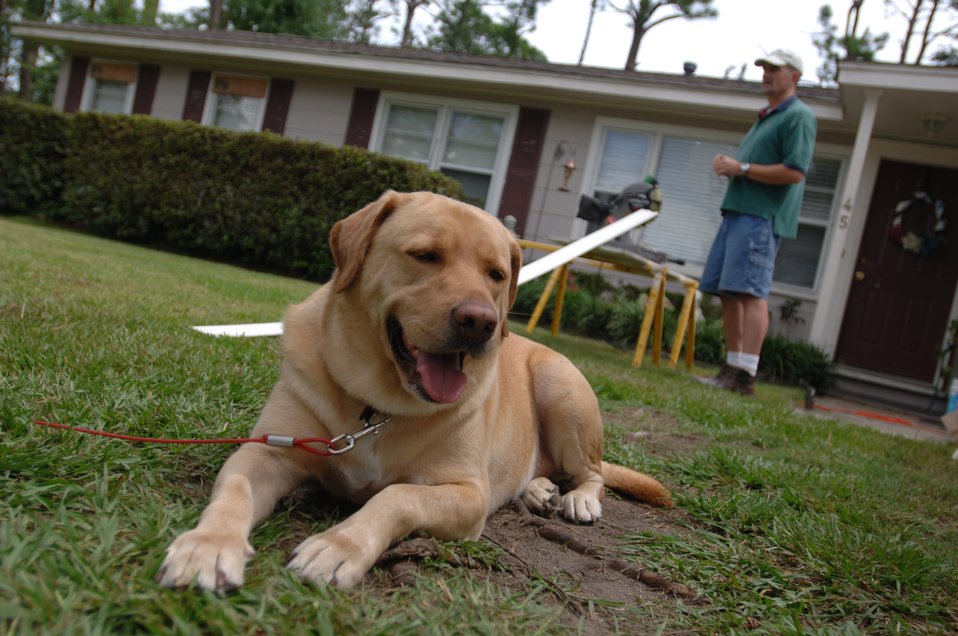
Hurricane hunter deals with aftermath of Katrina

Master Sgt. Daniel Peters' dog waits while Peters prepares a crown moulding for his house in Biloxi. MSgt Peters is one of several Air Force members whose house was severely water damaged from Hurricane Katrina. MSgt Peters of the 403rd Airlift Squadron on Keesler AFB, MS has been coming home everyday for the last year to repair his house.